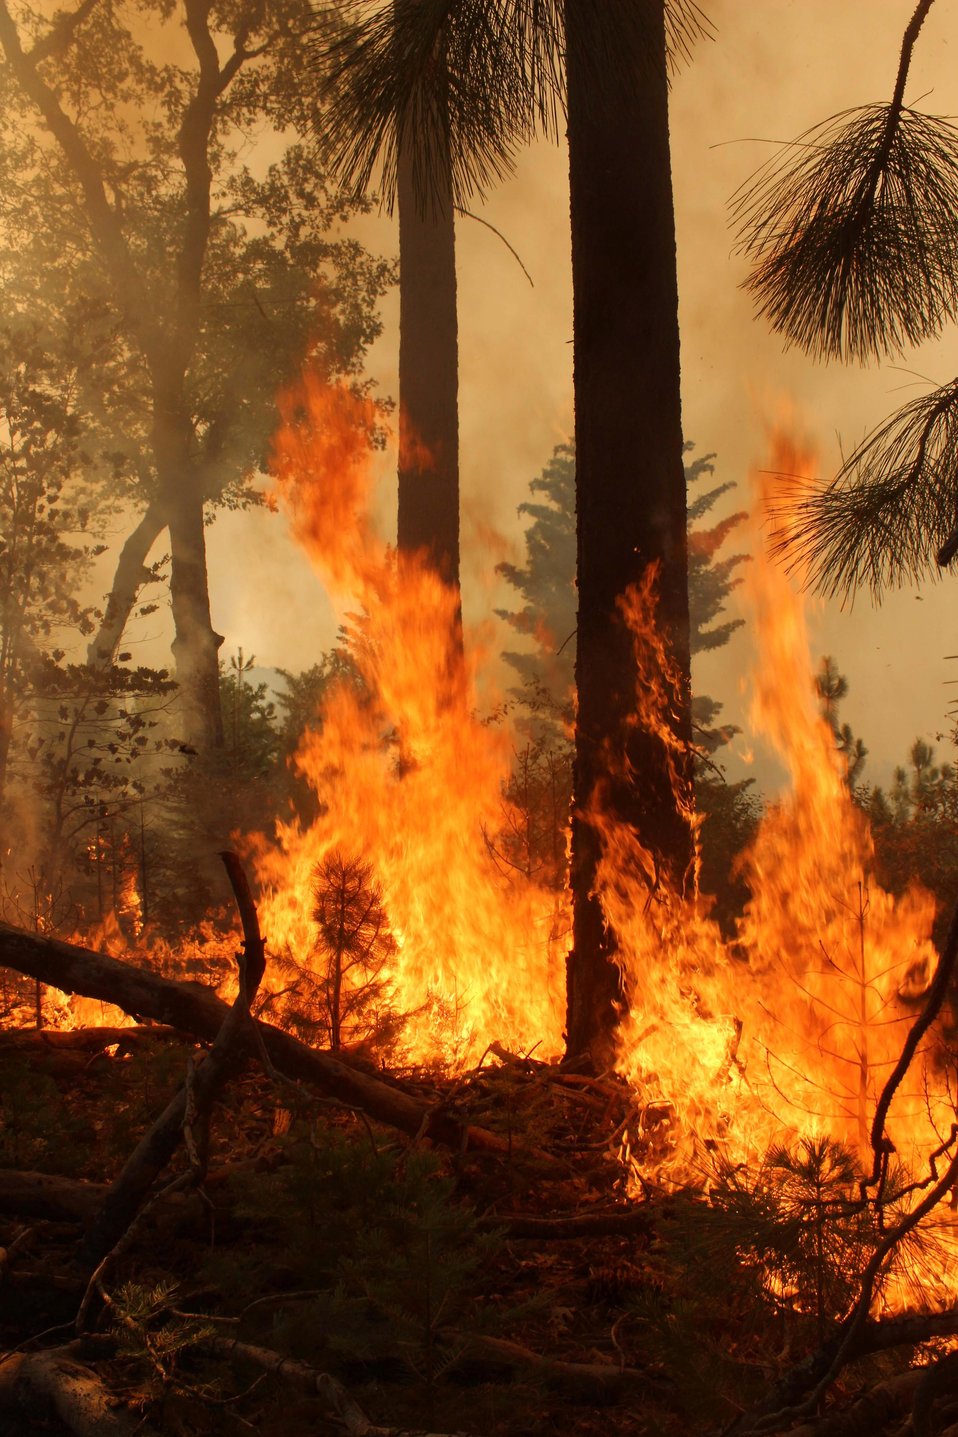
The Rim Fire in the Stanislaus National Forest near in California began on Aug. 17, 2013 and is under investigation. The fire has consumed approximately 235,841 acres and is 70% contained.